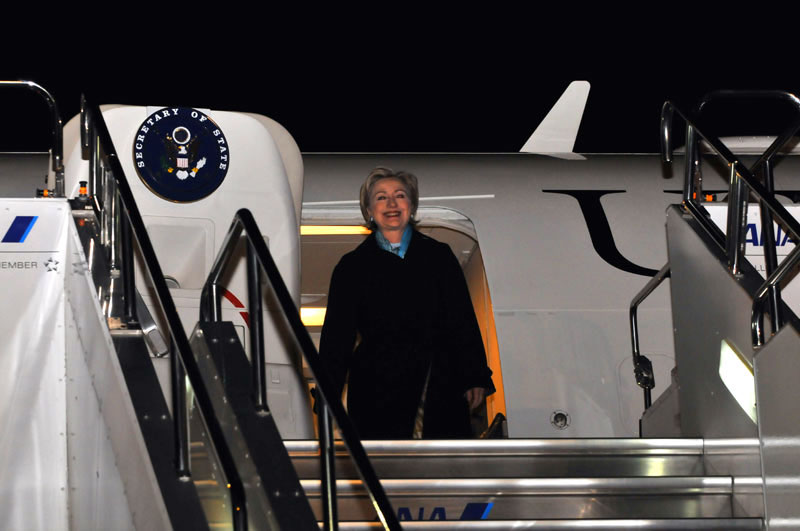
Secretary Clinton Arrives in Tokyo

U.S. Secretary of State Hillary Rodham Clinton arrives at Tokyo's Haneda Airport on Feb. 16, 2009 (7:30 p.m. local time) on the first leg of her trip to East Asia.